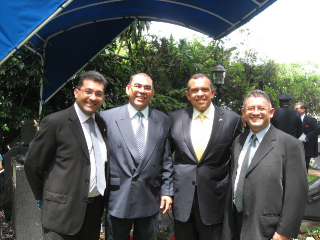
July 4th Celebration at U.S. Embassy in Honduras

U.S. Embassy Tegucigalpa in Honduaras staff pose for a photo with Honduran President Porfirio Lobo Sosa during the U.S. Independence Day celebration at the U.S. Ambassador to Honduras’ residence in Tegucigalpa, Honduras, on July 2, 2010.